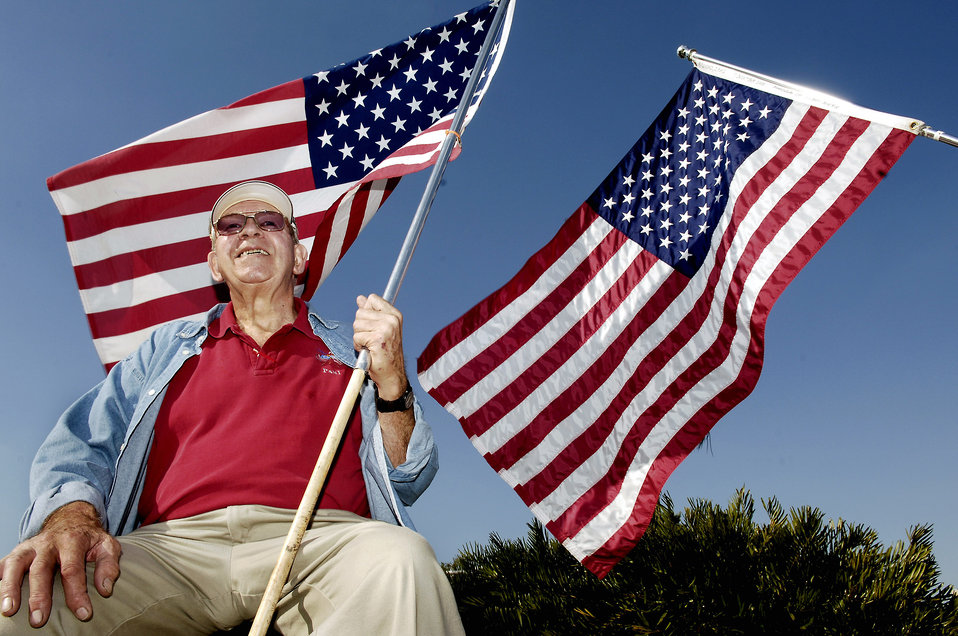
Patriots show their support

Paul Diehl shows his patriotism to members March 21 at MacDill Air Force Base, Fla. Mr. Diehl is a member of the Bayshore Patriots in Tampa. The patriots show their support to military members and their families by waving the American flag on one of the busy roads in Tampa. They consist of retired military and civilian members of the community.